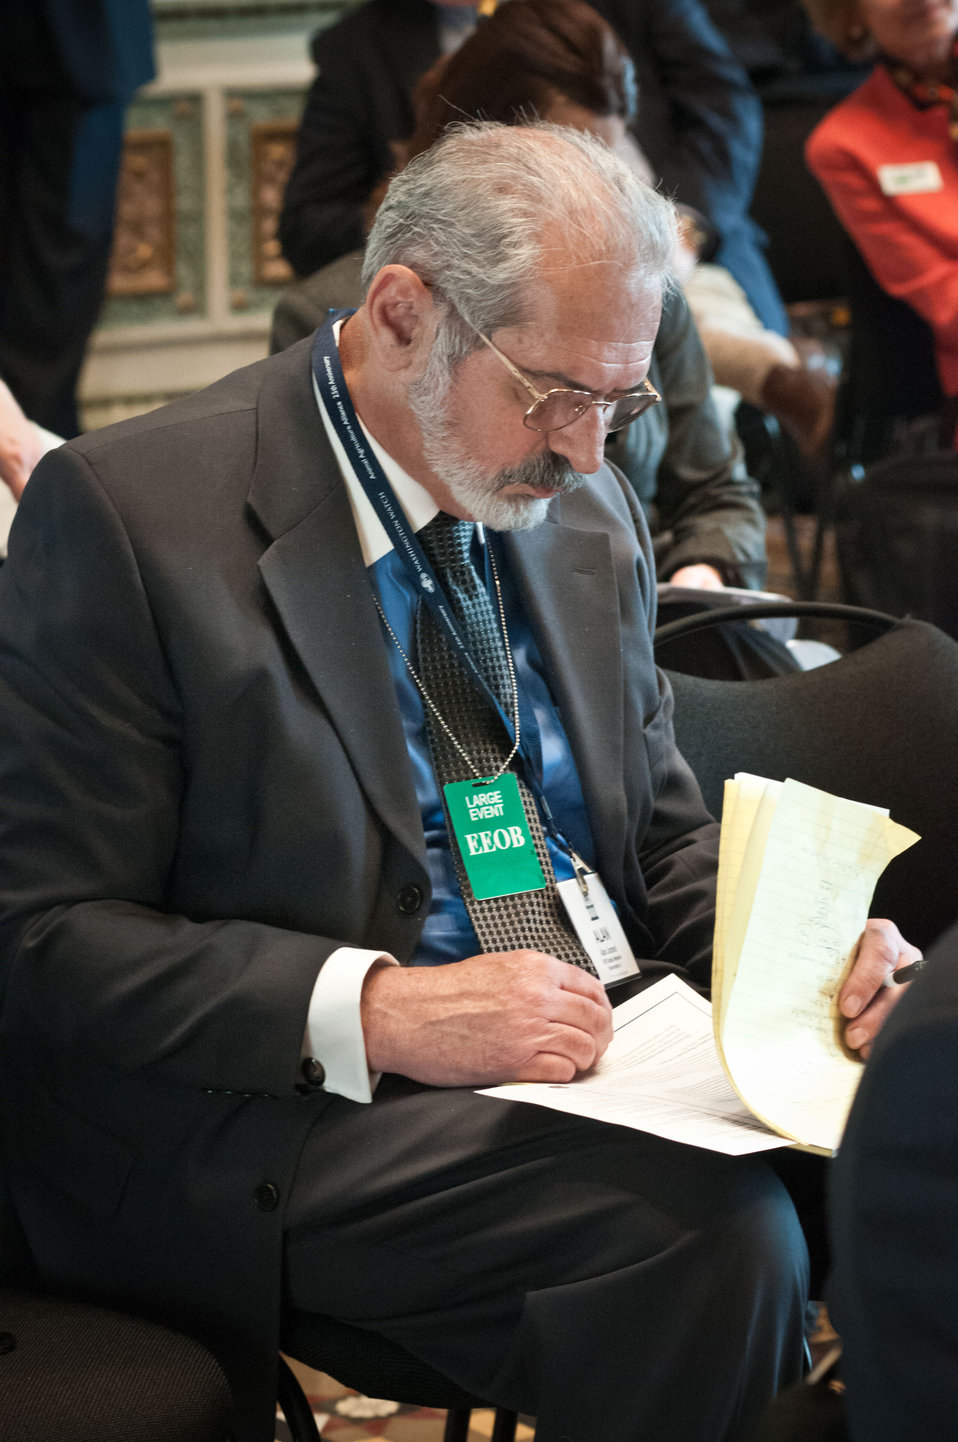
Alan Jarand, RFD Radio Network, Bloomington, Illinois notes during the Spring National Association of Farm Broadcasters (NAFB), “Washington Watch” member retreat in Washington, D.C. This year the meeting was held in the Eisenhower Executive Office Building, Indian Treaty Room on Tuesday, April 24, 2012, featuring United Sates Department of Agriculture and Obama Administration officials. This opportunity provides an occasion to highlight efforts to rebuild and revitalize rural America, including efforts for the agricultural community. NAFB is the recognized and trusted source of agricultural and rural lifestyle information for America with approximately 200 members who broadcast via radio in nearly every state in the country.